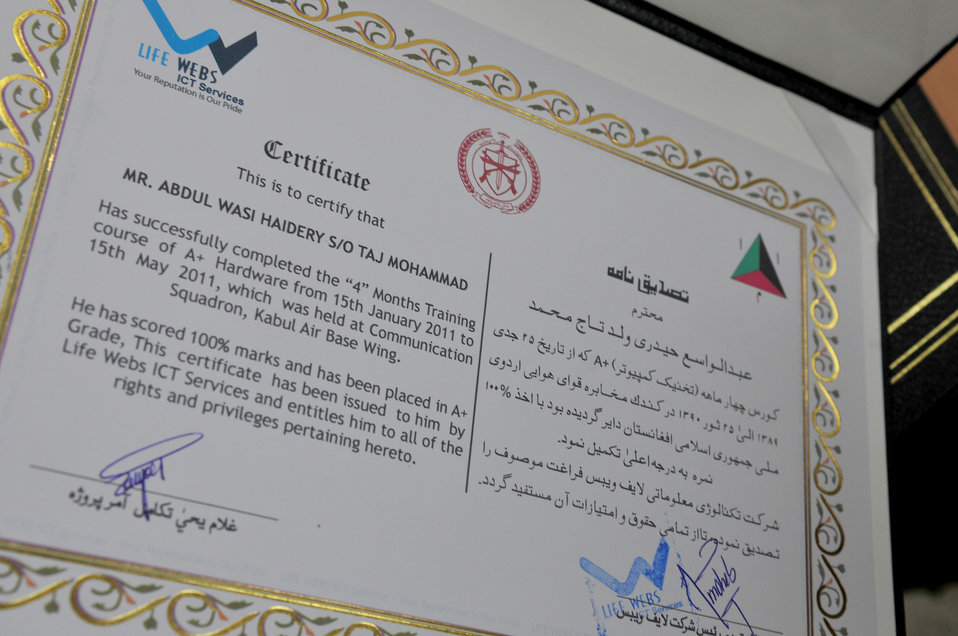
Afghan air force networking class

Fifteen Afghan air force members graduated from the A training course June 22, 2011, in Kabul, Afghanistan. The students are now capable of repairing desktop systems, troubleshooting, upgrading, configuring, installing and running overall basic network management processes.